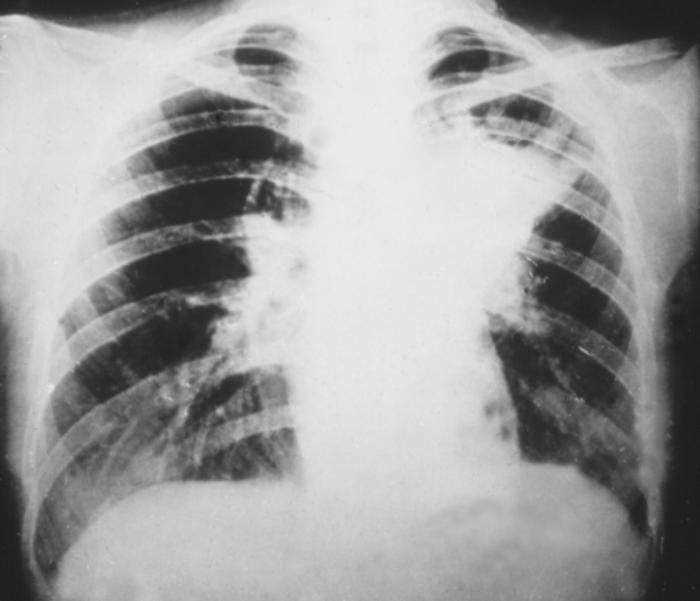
This AP chest X-ray demonstrates lung infiltrates due to Blastomycosis, caused by Blastomyces dermatitidis bacteria.